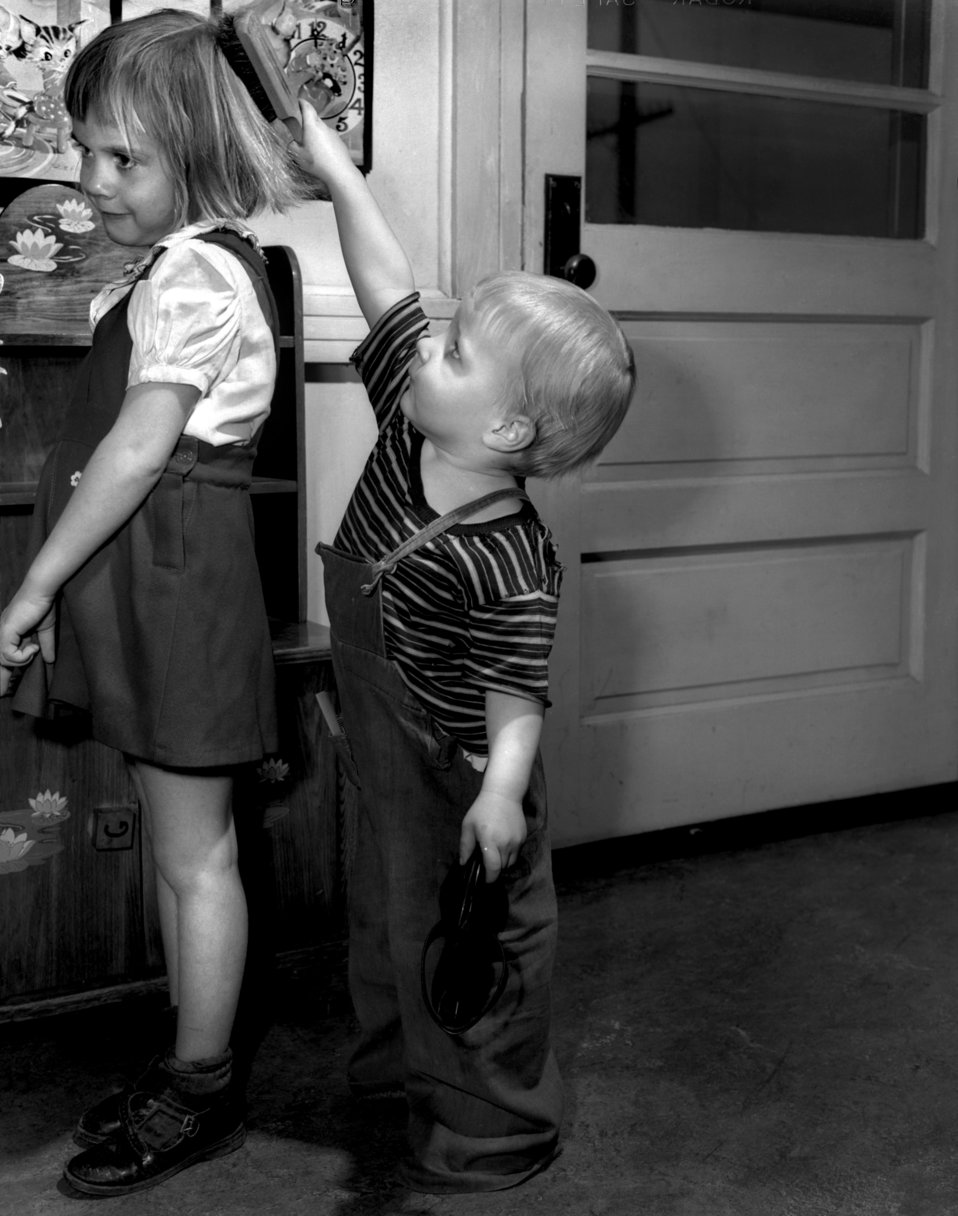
Nesper House Oak Ridge

3262-10 DOE photo Ed Westcott 1-23-1947 Child care for working mothers/famlies Oak Ridge Tennessee